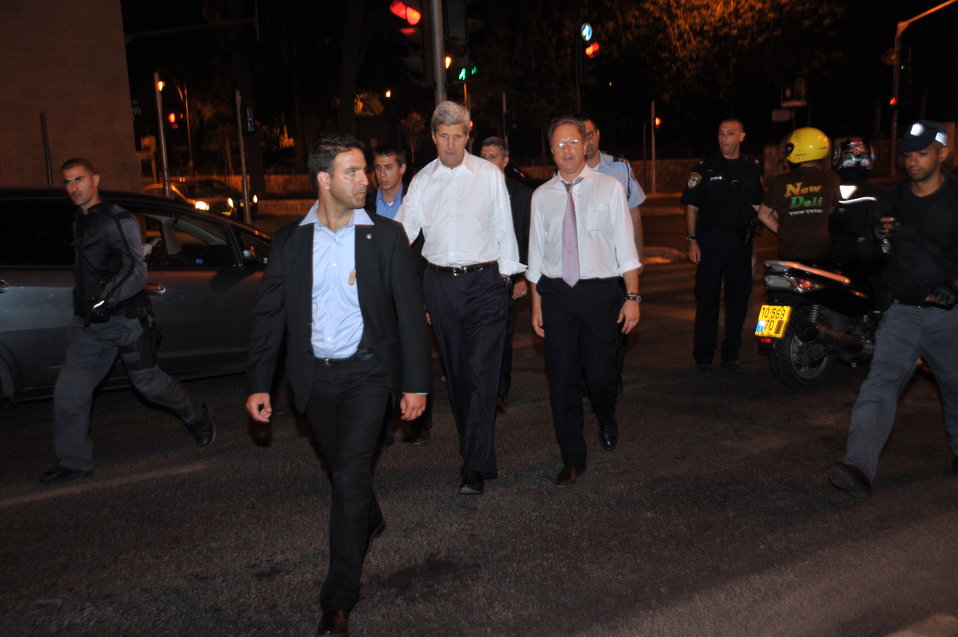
Secretary Kerry Takes a Walk in Jerusalem

U.S. Secretary of State John Kerry, accompanied by Deputy Special Envoy for Middle East Peace Frank Lowenstein and other senior advisors, returns from a walk in Jerusalem after more than six hours of talks with Israeli Prime Minister Benjamin Netanyahu on June 30, 2013.